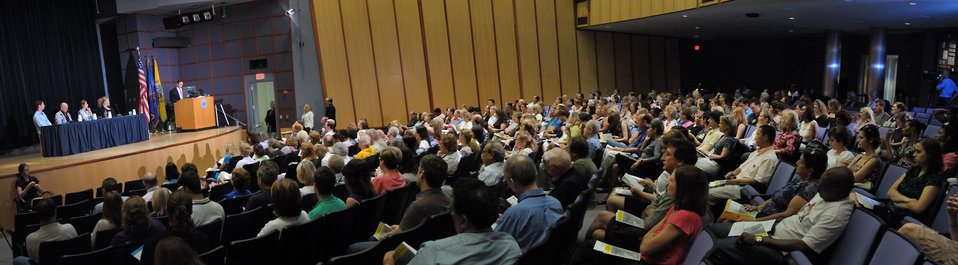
1

NIDA's Addiction Performance Project, held August 5, 2011 on the NIH Campus